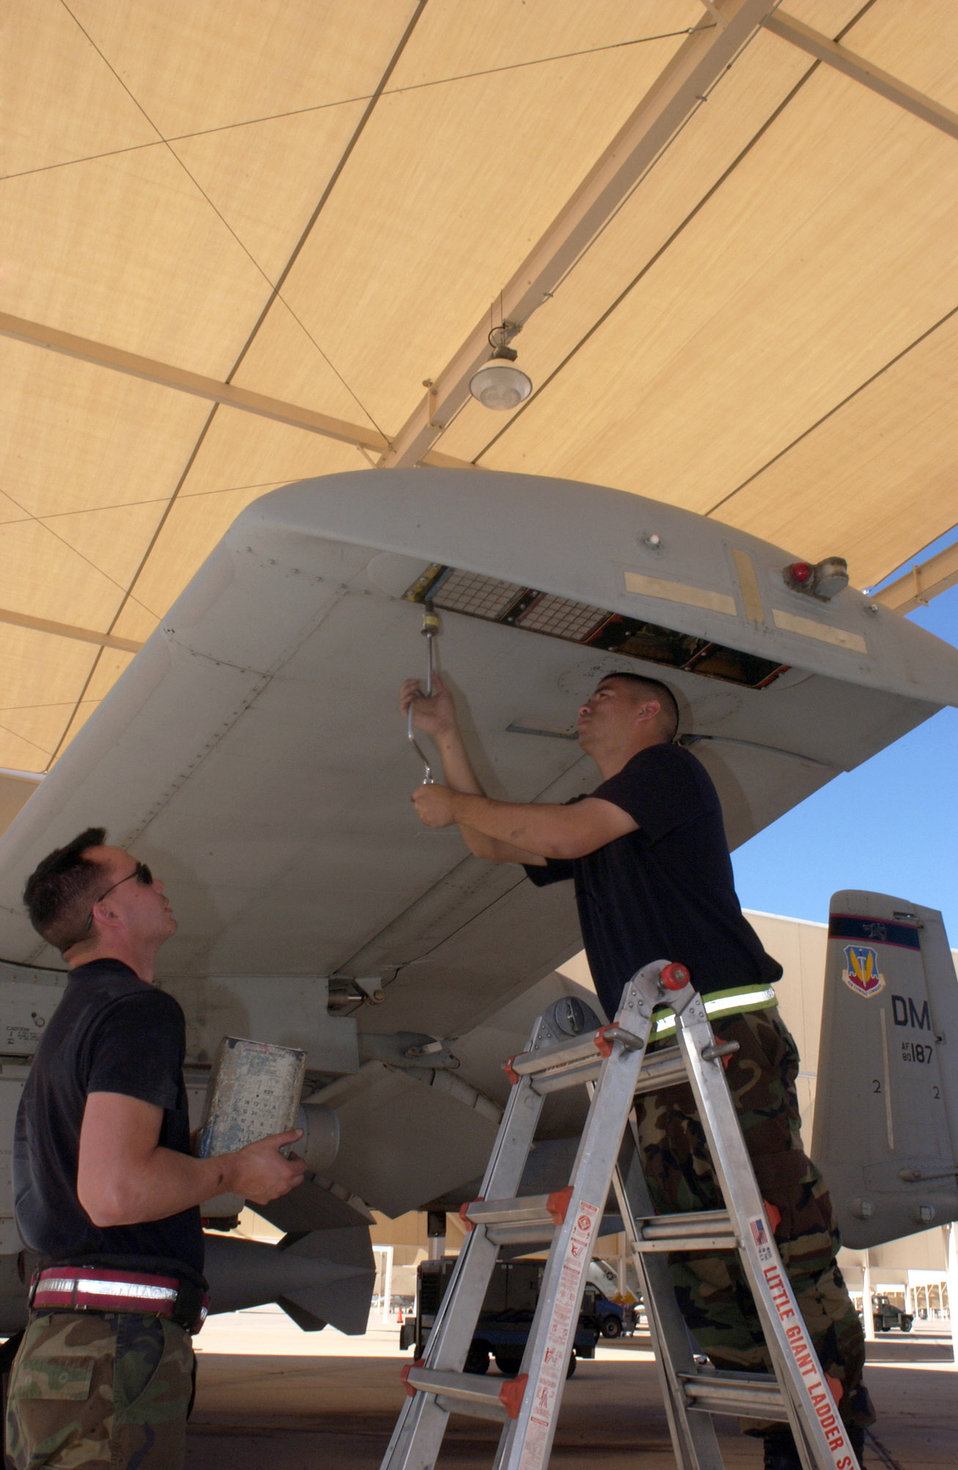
This A-10's getting ready to roll

Senior Airmen Randy Loera (left) and Jesse Vida install chaff and flare dispensers on an A-10 Thunderbolt II Oct. 28 on the flightline of Davis-Monthan Air Force Base, Ariz. The Airmen are weapons loaders from the 355th Maintenance Operations Squadron.